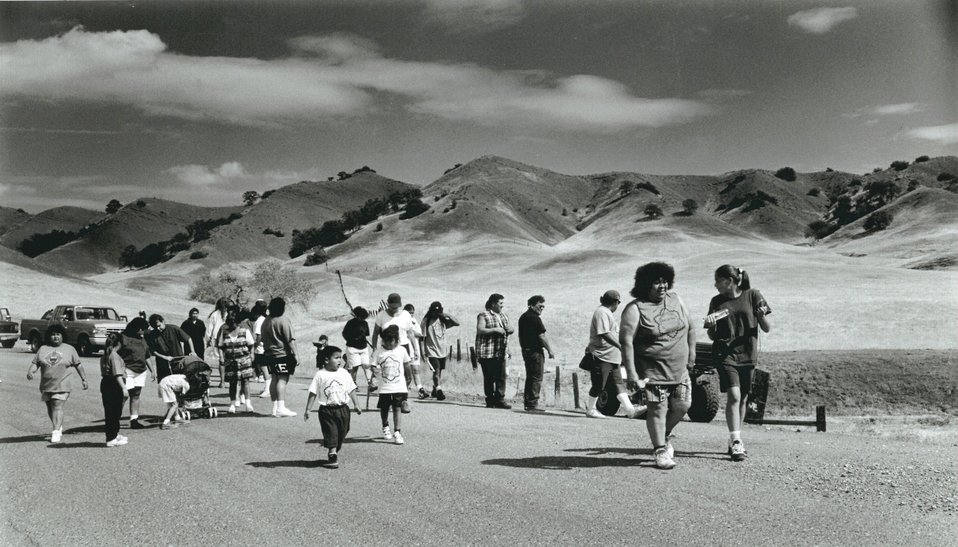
nomecult1

Members of the Round Valley Indian Tribe retrace the 1863 route of the Nome Cult walk, a forced relocation of Indians from Chico, Calif., to Covelo, CA.